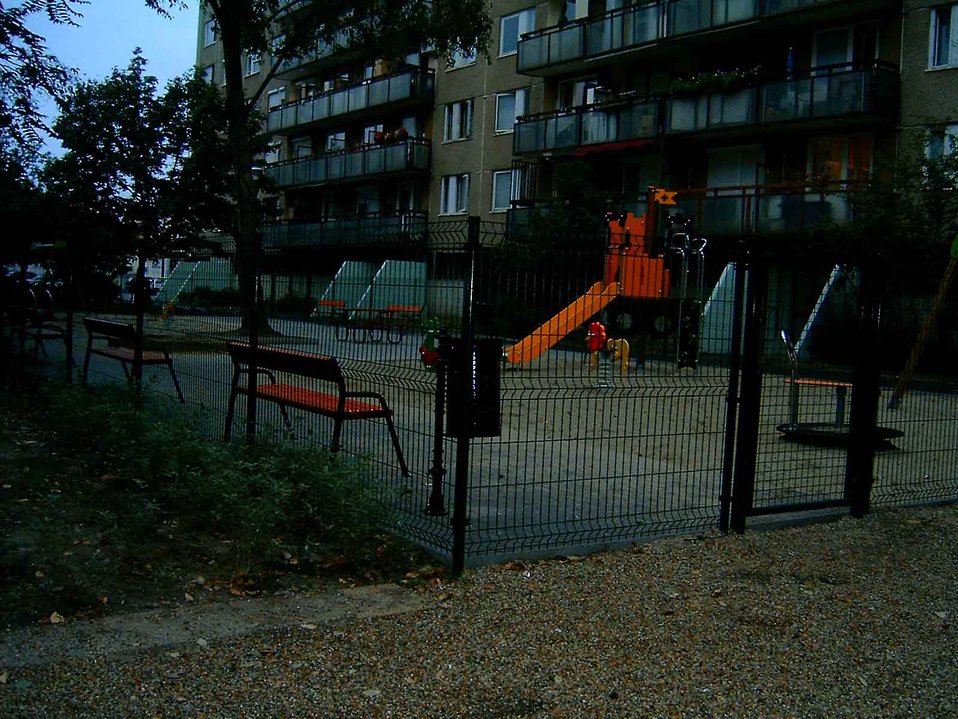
Magyar: Kispesti játszótér Deutsch: Spielplatz in Kispest (19. Bezirk in Budapest) Playground in Kispest (19th district in Budapest)